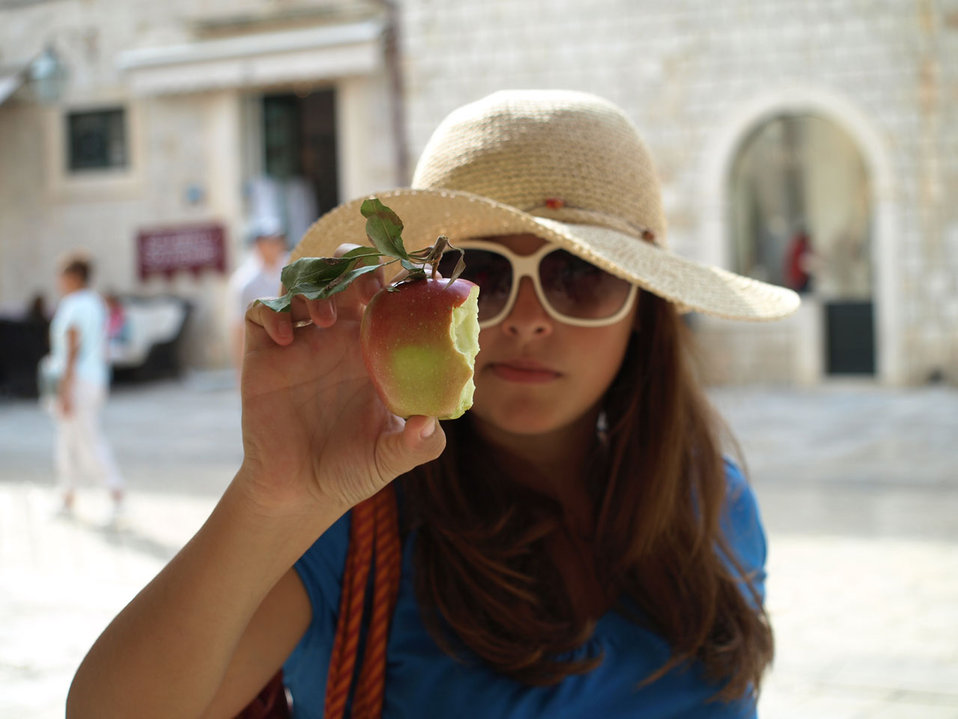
Girl with apple

Girl with half eaten apple.